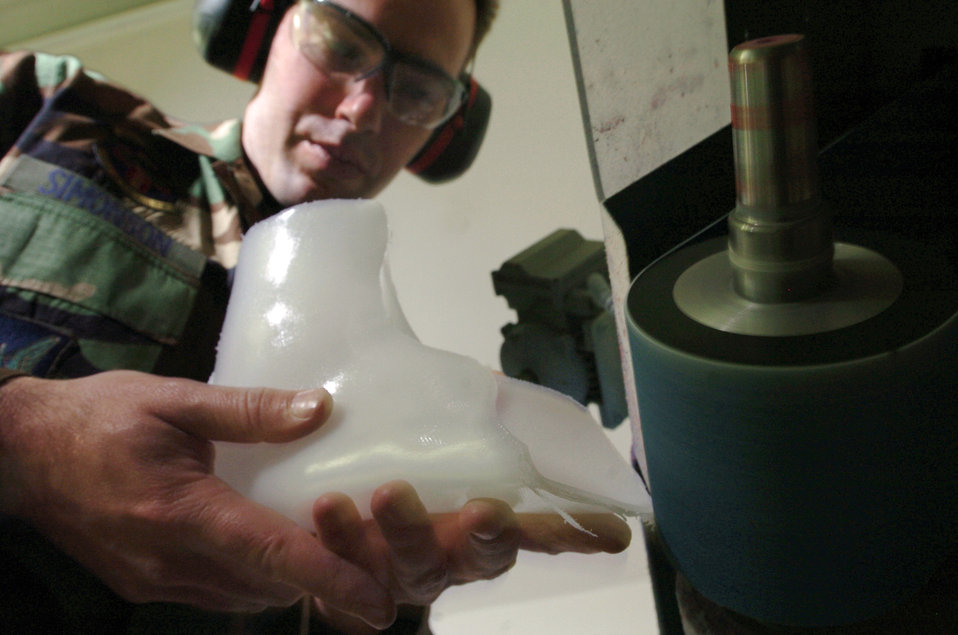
Airman helps people get back on their feet

YOKOTA AIR BASE, Japan -- Master Sgt. Nathan Simonson shapes a custom ankle orthosis here. The orthotic lab technician makes, assembles and repairs orthopedic appliances for patients who require protective support or correction because of bone or muscle injury, impairment disease or deformity. He is assigned to the 374th Medical Group here.